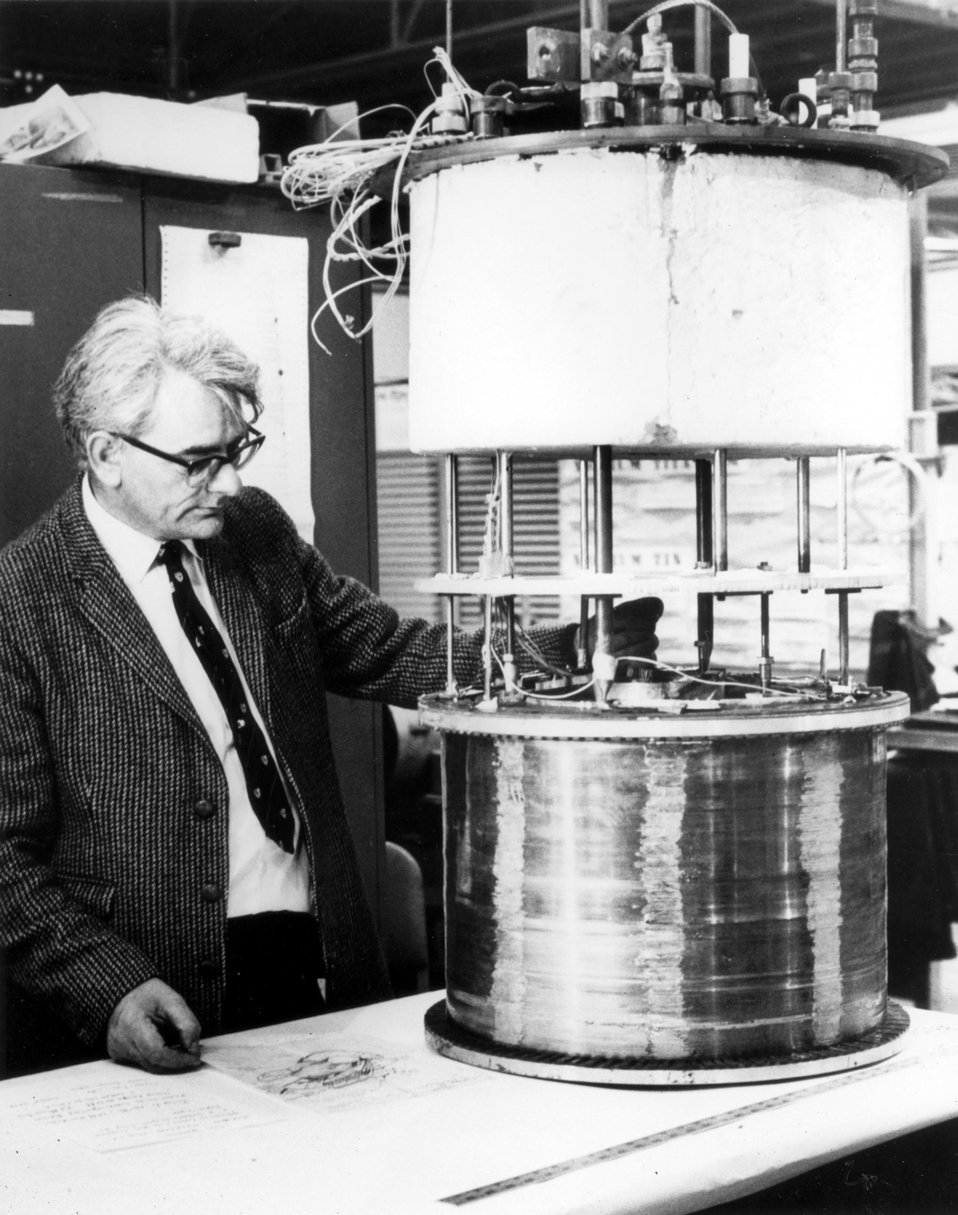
Argonne engineer inspects an experimental superconducting magnet assembly.
c.1970